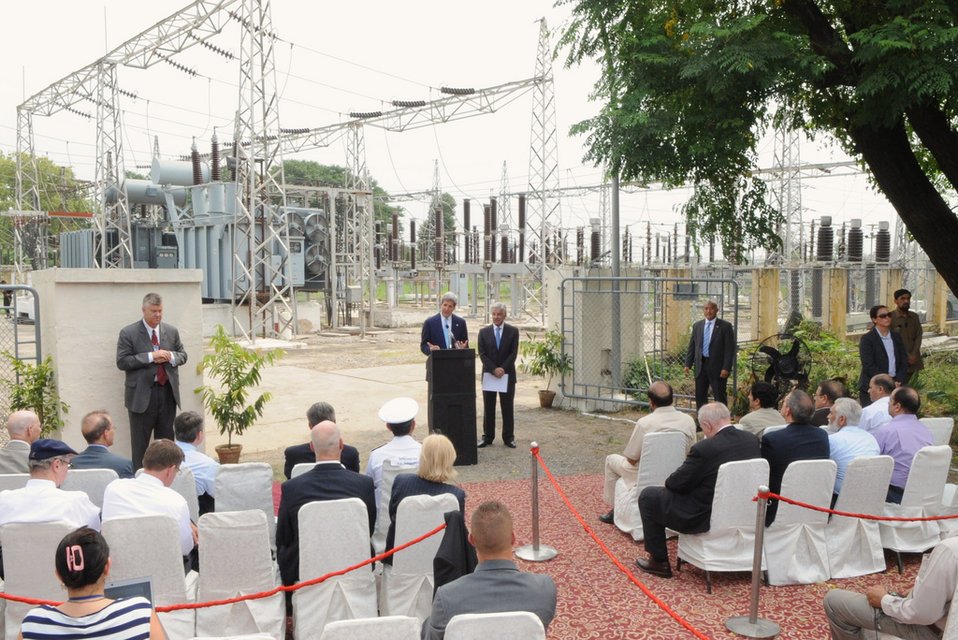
Secretary Kerry Highlights a USAID Power Program

U.S. Secretary of State and Pakistani Minister of Power and Water Khawaja Asif discuss how USAID power meters save electricity during a power station visit in Islamabad, Pakistan, on August 1, 2013.